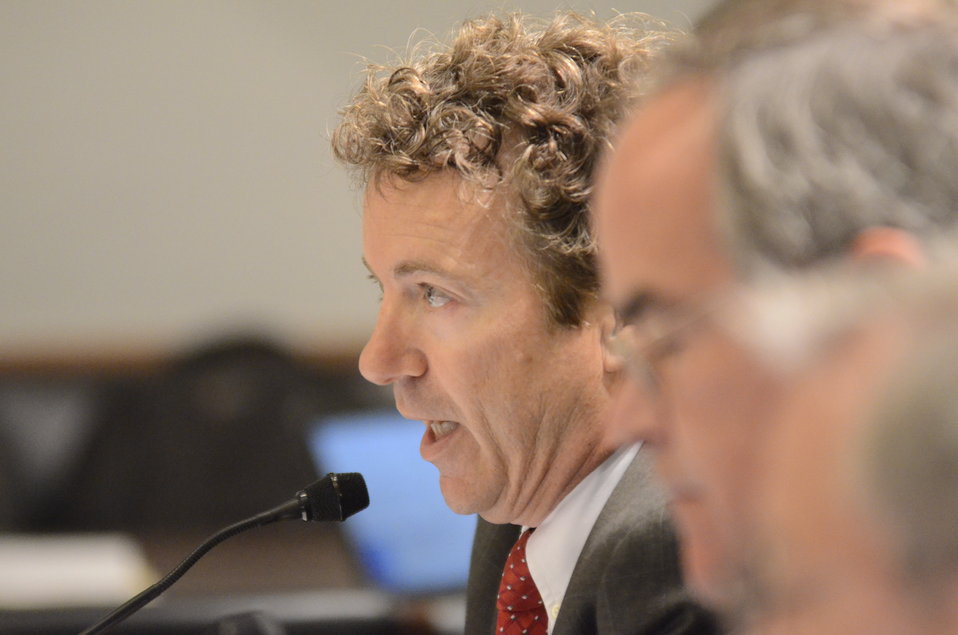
Senator Dr. Rand Paul (KY) testifies on Retailers & Entertainers Lacey Implementation & Enforcement Fairness Act & Freedom from Over-Criminalization & Unjust Seizures Act, at the Longworth House Office Building in Washington, D.C. on Tuesday, May 8, 2012.